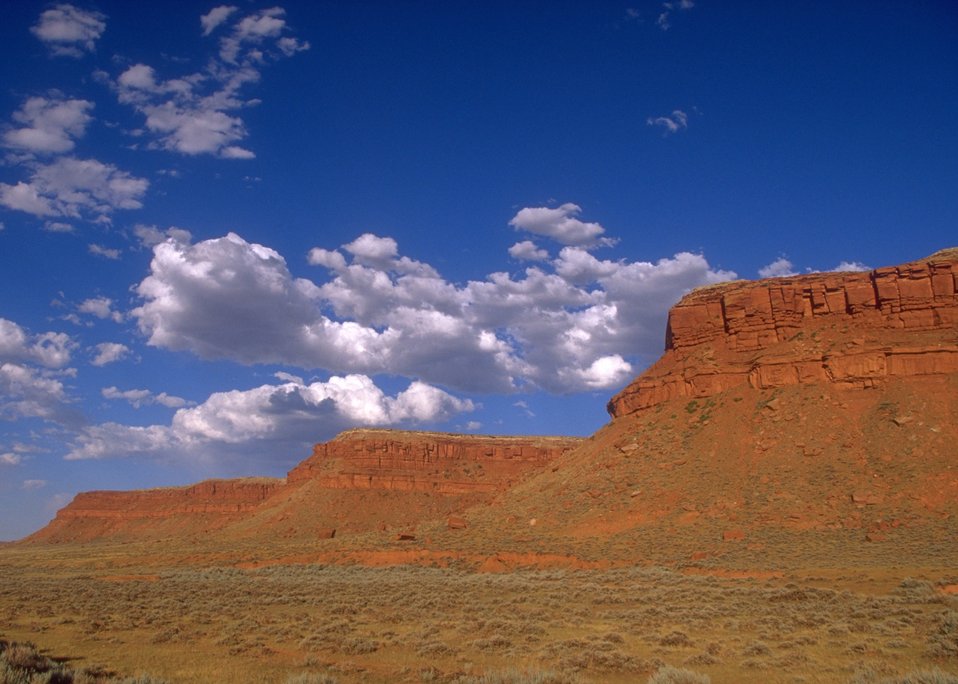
View of Red Wall, Buffalo Field Office.